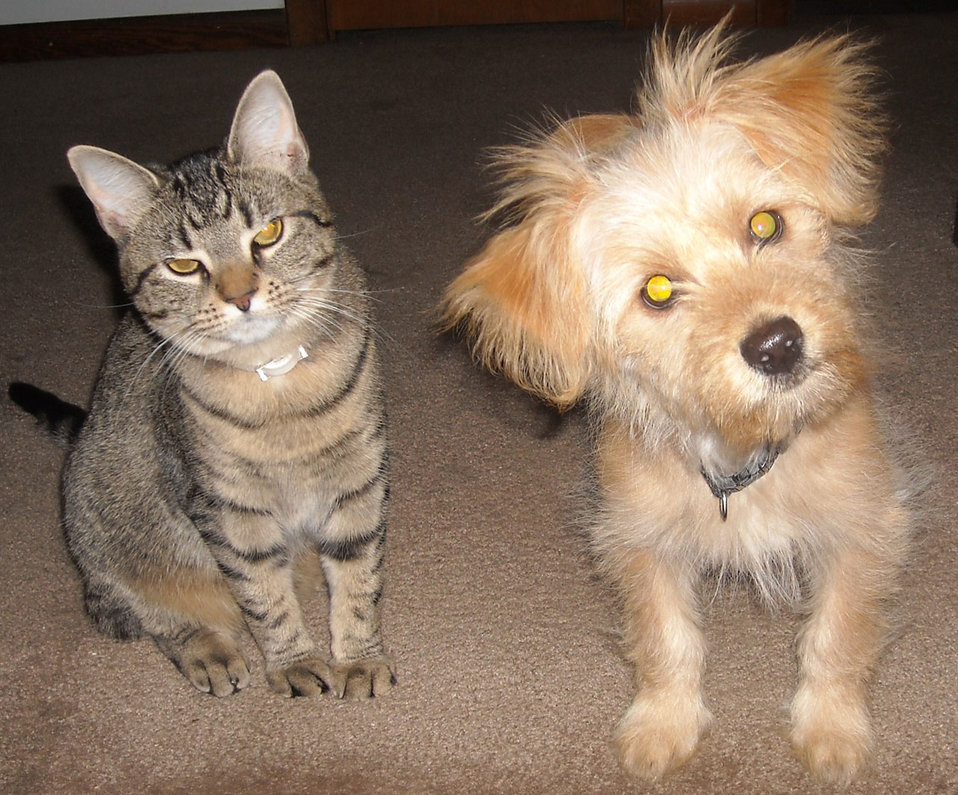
Cat and dog.